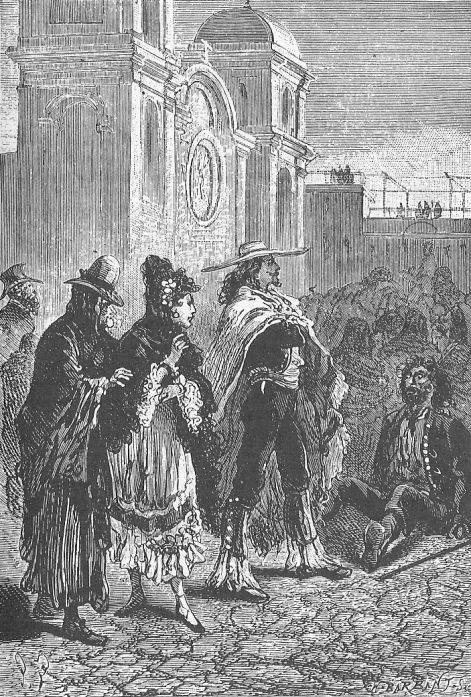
An illustration from Jules Verne's short story 'Martin Paz' (1852) drawn by Jules Férat. Polski: Ilustracja opowiadania Juliusza Verne'a 'Martin Paz' (1852) autorstwa Julesa Férata. Français : Jules Verne 'Martin Paz' (1852), dessins par Julesa Férata. Orginal description taken from the book: Français : Le jeune Indien, les bras croisés, attendait…